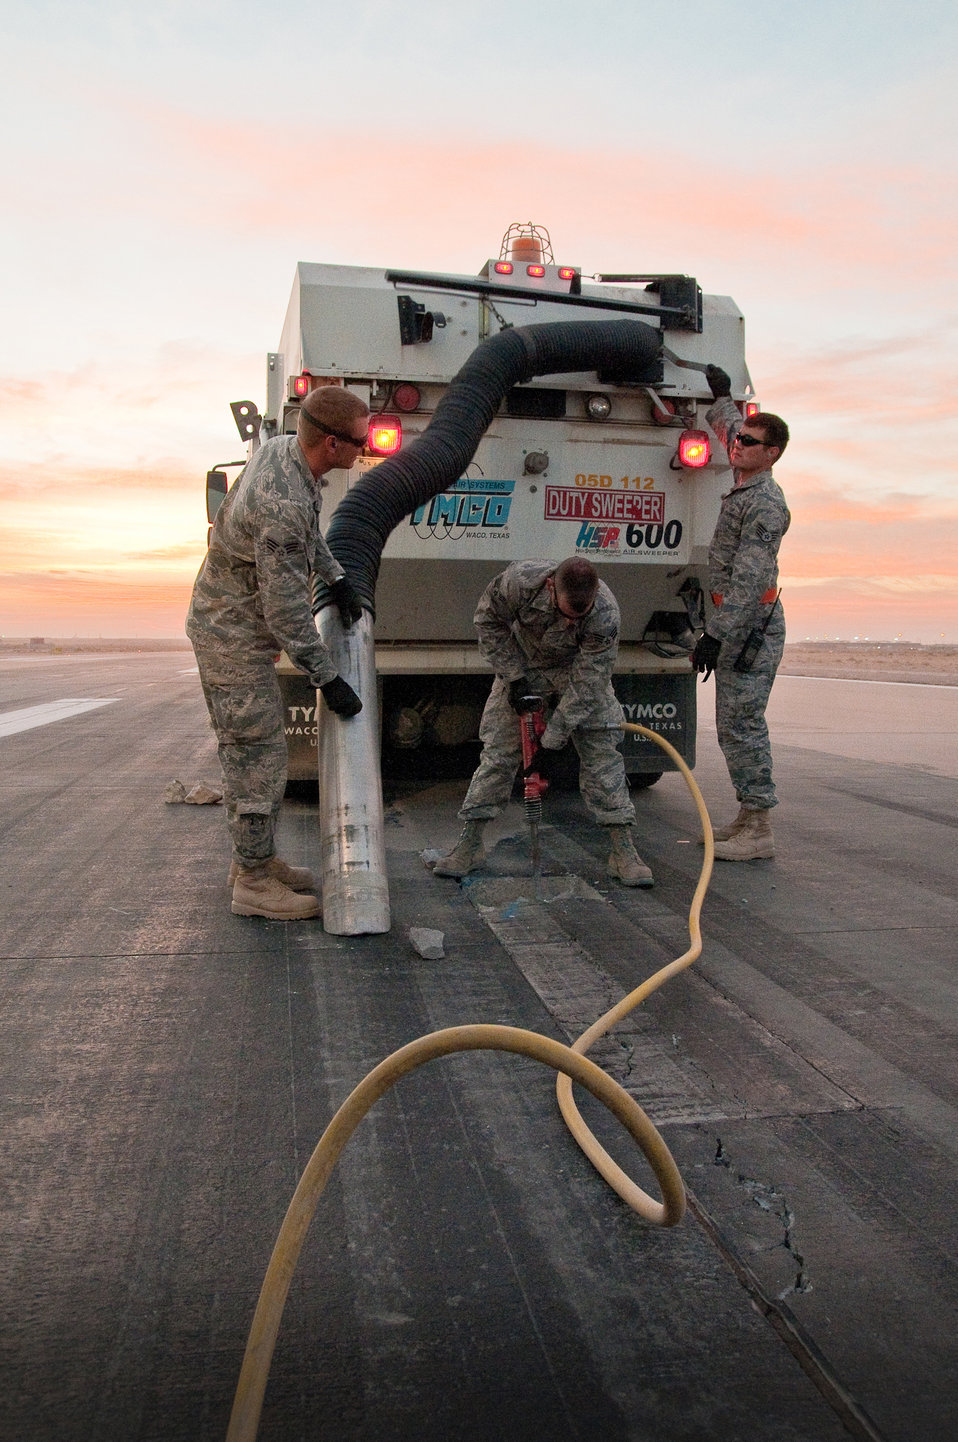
Hammer time

Members of the 386th Expeditionary Civil Engineer Squadron's Runway Repair Team excavate cracked pavement and remove debris with a sweeper truck Dec. 10, 2010, on a runway on an air base in Southwest Asia.